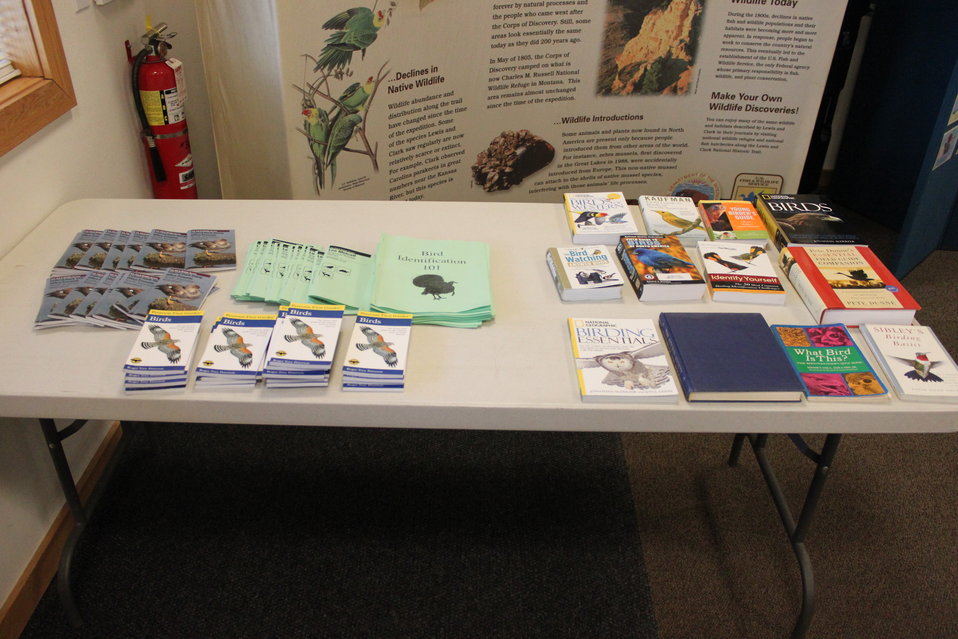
Field Guides and References

Christmas Bird Count for Kids (CBC4Kids) provides field guides and references. Each student was given: Peterson First Guide-Birds (donation from Five Valleys Audubon Society of Missoula, Montana), Ducks at a Distance and Refuge wildlife checklist. Students could also borrow binoculars (several pairs from the Birder Friendly Refuge initiative). Reference books (again from Birder Friendly Refuge initiative) were available to use.